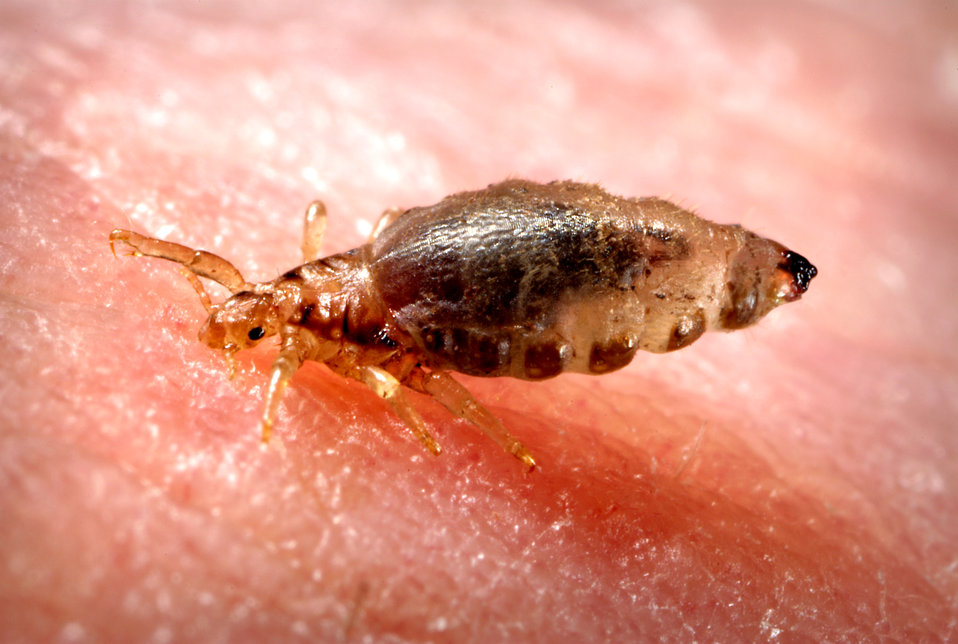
This 2006 photograph depicted a lateral view of a female body louse, Pediculus humanus var. corporis, as it was obtaining a blood-meal from a human host, who in this case, happened to be the photographer. Note its elongated abdominal region without any processes, and three pairs of legs, which are all equal in length and width, features displayed by Pediculus members.Body lice are parasitic insects that live on the body, and in the clothing or bedding of infested humans. Infestation is common, found worldwide, and affects people of all races. Body lice infestations spread rapidly under crowded conditions where hygiene is poor, and there is frequent contact among people. Note the sensorial setae, or hairs that cover the louse's body, which pick up, and transmit information to the insect about changes in its environment such as temperature, and chemical queues. The dark mass inside the abdomen is a previously ingested blood meal.